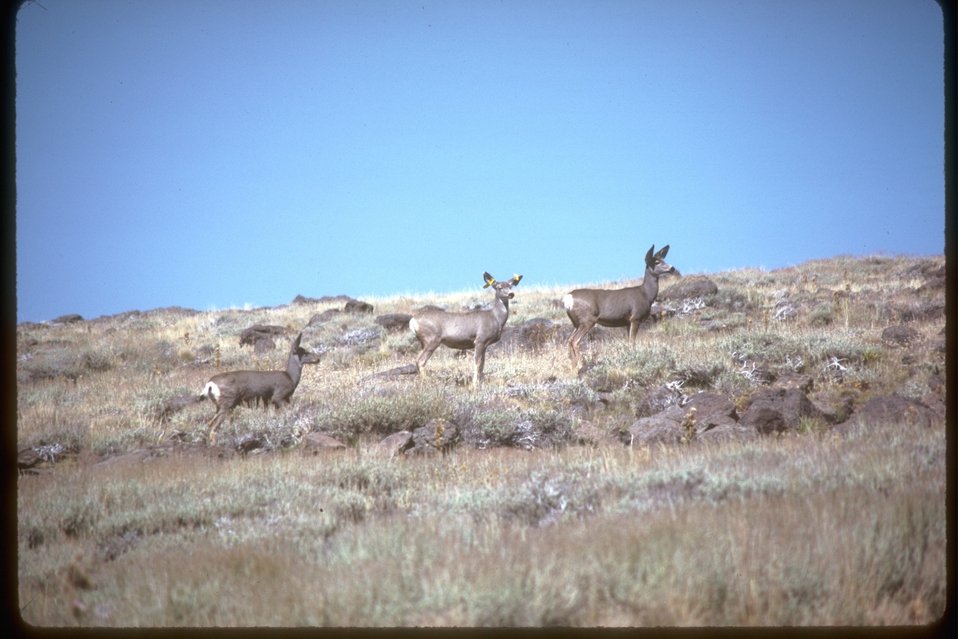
Wildlife in Steens Mountain area.